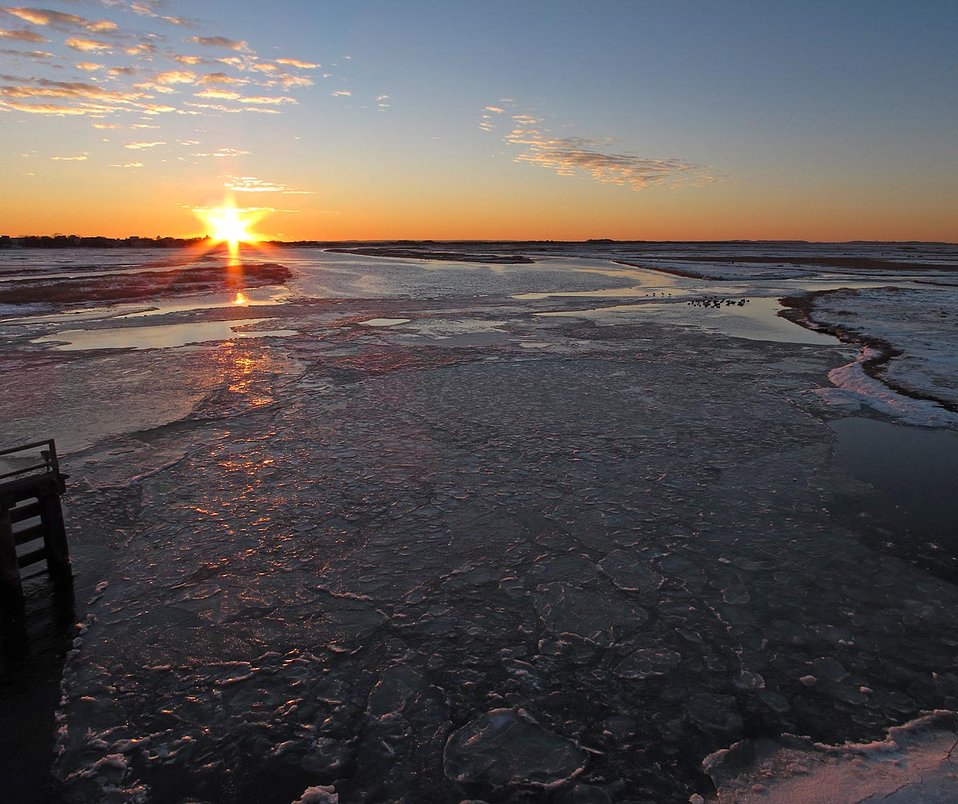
Plum River Sunrise

Sunrise over the Plum River at Parker River National Wildlife Refuge in Newburyport, Massachusetts.